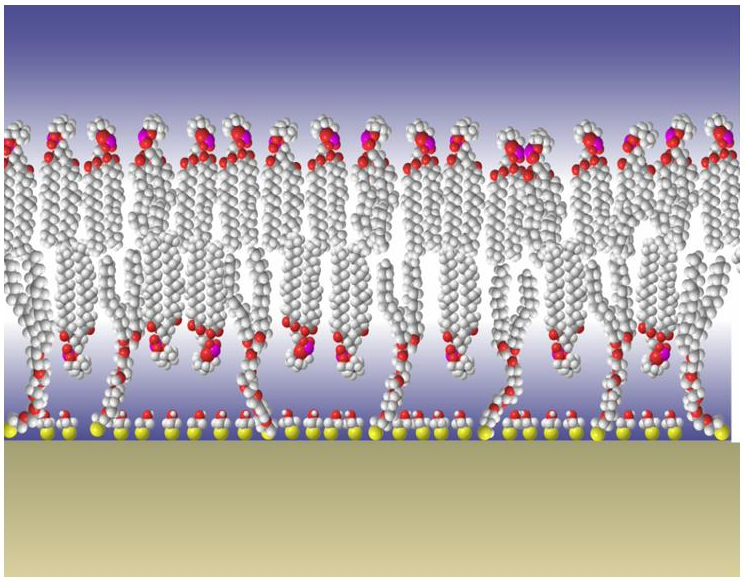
NIST Membrane Model

Diagram of NIST's 'tethered bilayer membrane' model shows the silica surface covered with gold at the bottom. Sulfur atoms (yellow spheres) bind to the gold and act as anchors for the tethers, chains of atoms extending up to the lipid bilayer membrane at the top of the structure.